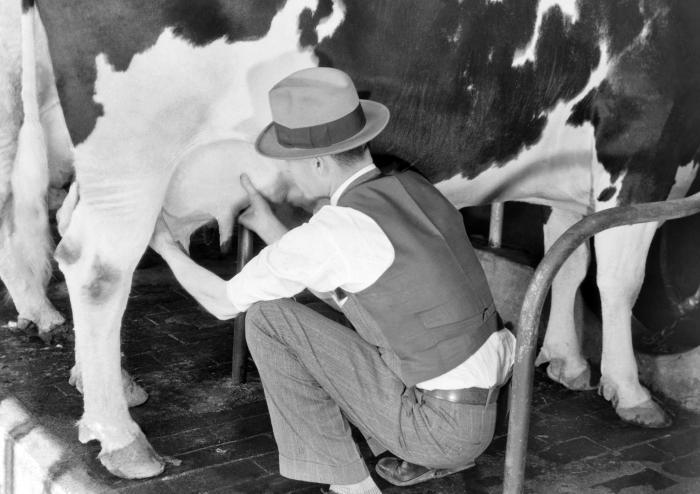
This historic 1932 photograph showed a veterinarian conducting a medical examination of dairy cows at the state tuberculosis sanatorium in Ah-Gwah-Ching, Minnesota. The dairy barn at the sanatorium was built in 1912. Ensuring animal health on the premises was an important step in keeping the food supply safe.